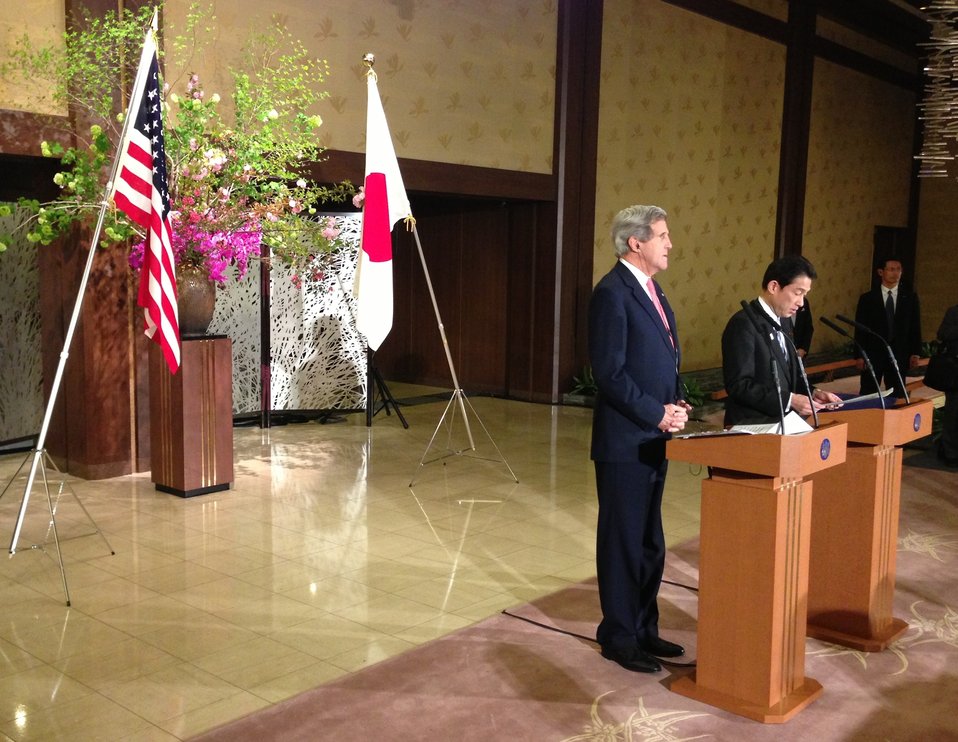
Secretary Kerry Listens as Japanese Foreign Minister Fumio Kishida Addresses News Conference

U.S. Secretary of State John Kerry listens as Japanese Foreign Minister Fumio Kishida addresses a joint news conference on Sunday in Tokyo, Japan, on April 14, 2013.